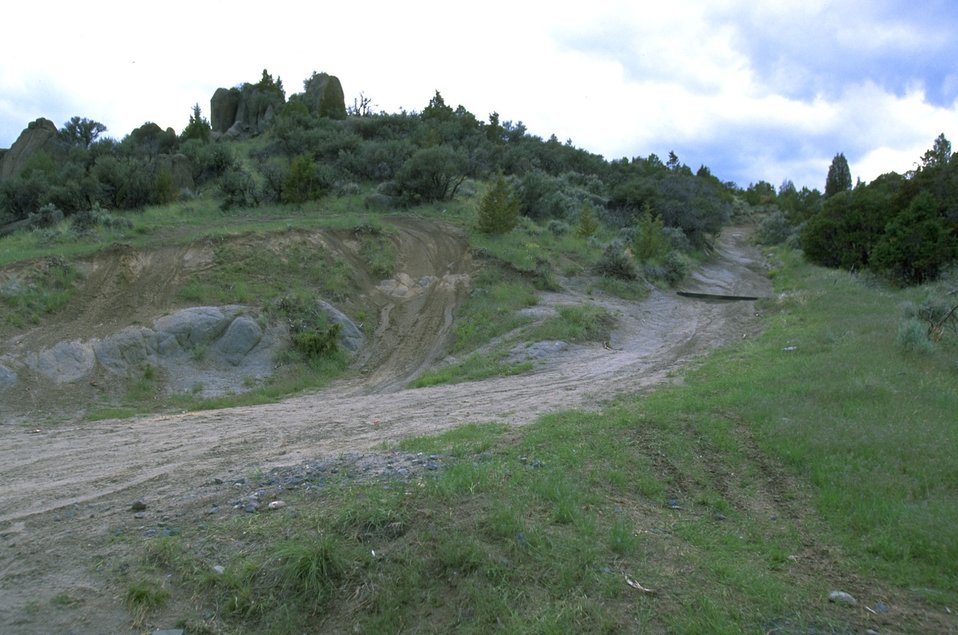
Road showing water bar - excessive damage to road